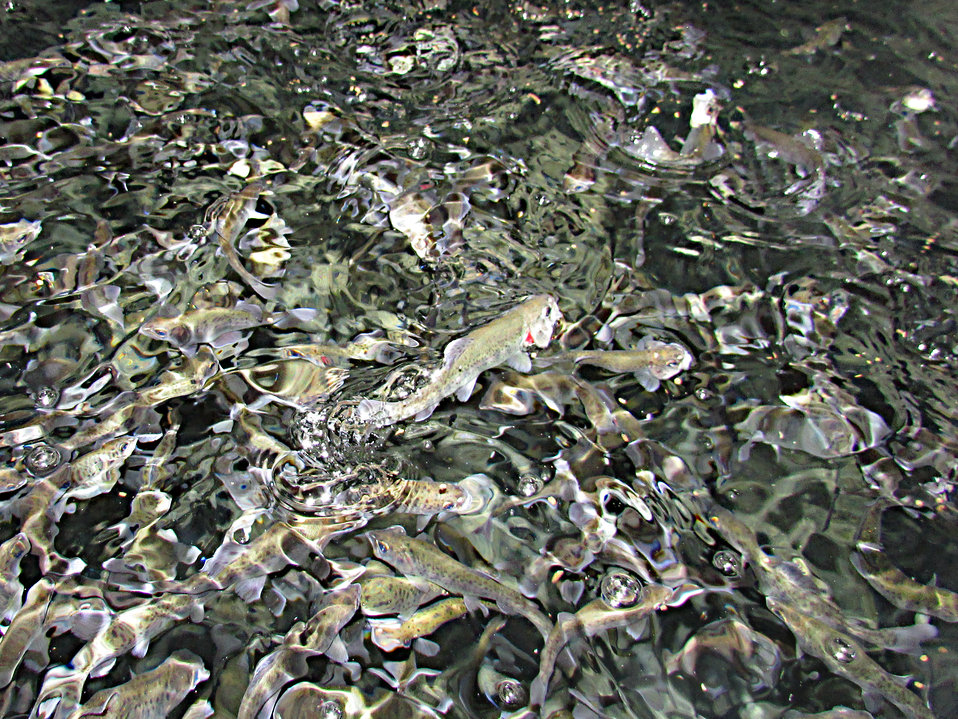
Feeding Frenzy

Here is a closeup of a trout feeding frenzy at the hatchery! These rainbows are about the length of your little finger.